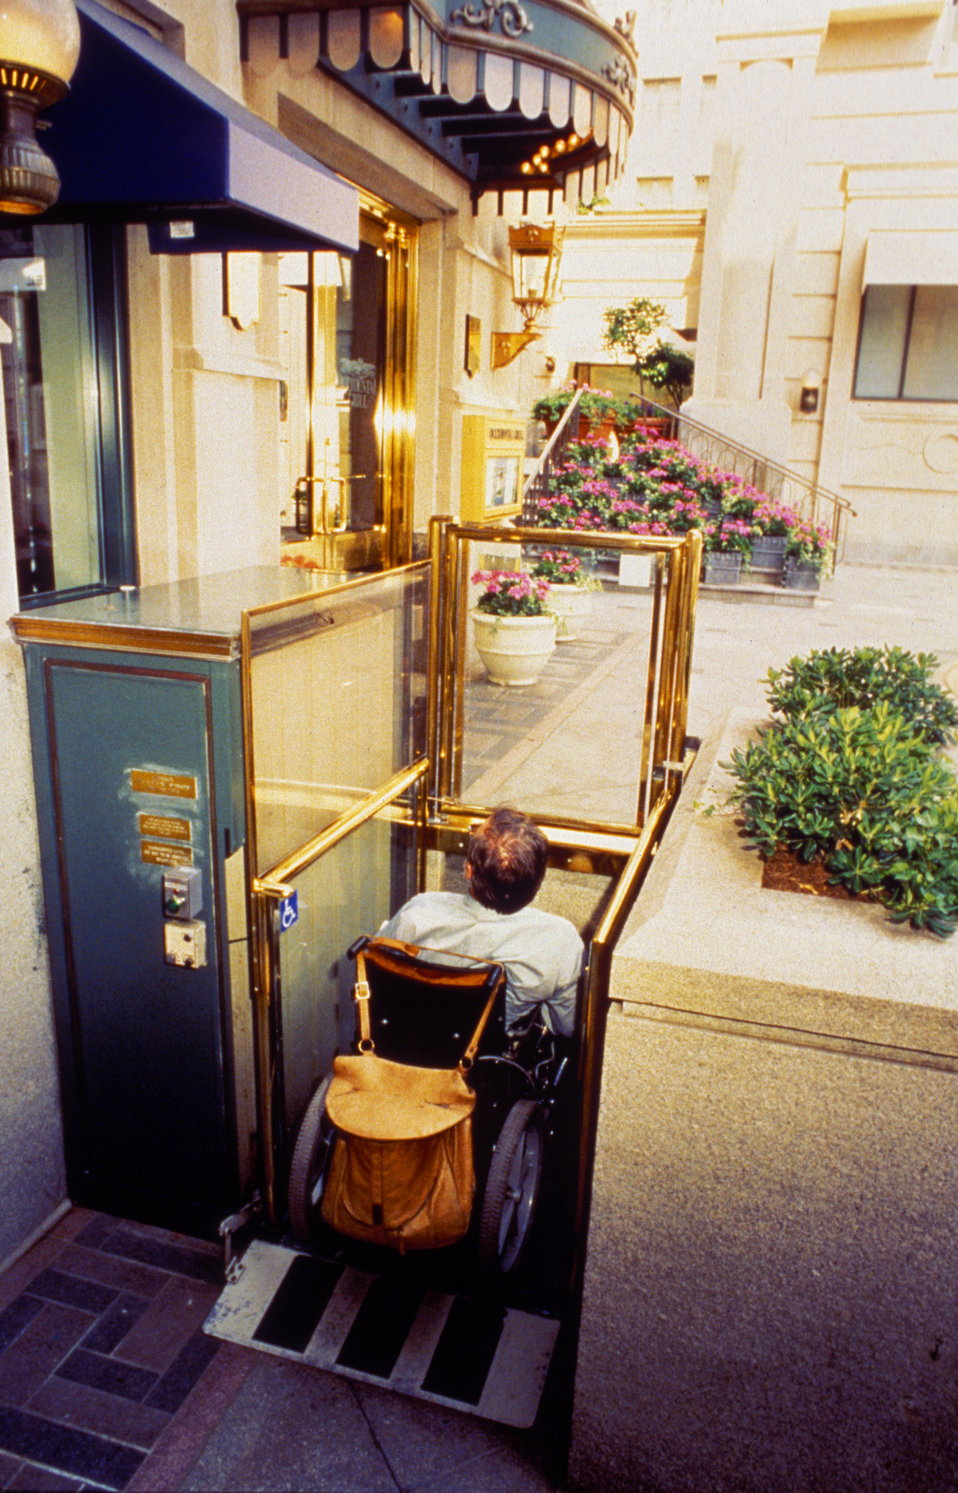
Seated in his wheelchair, this man was about to be lifted three to four feet, so that the wheelchair's wheels were level with the higher second level of a plaza's walkway. Lifts such as this, are sometimes the only means by which mobility-challenged individuals may be conveyed from one point to another, especially when the installation of stairs or a ramp is infeasible. The intentional use of glass and brass in the construction of this lift enabled the structure to be aesthetically unified with its surroundings.